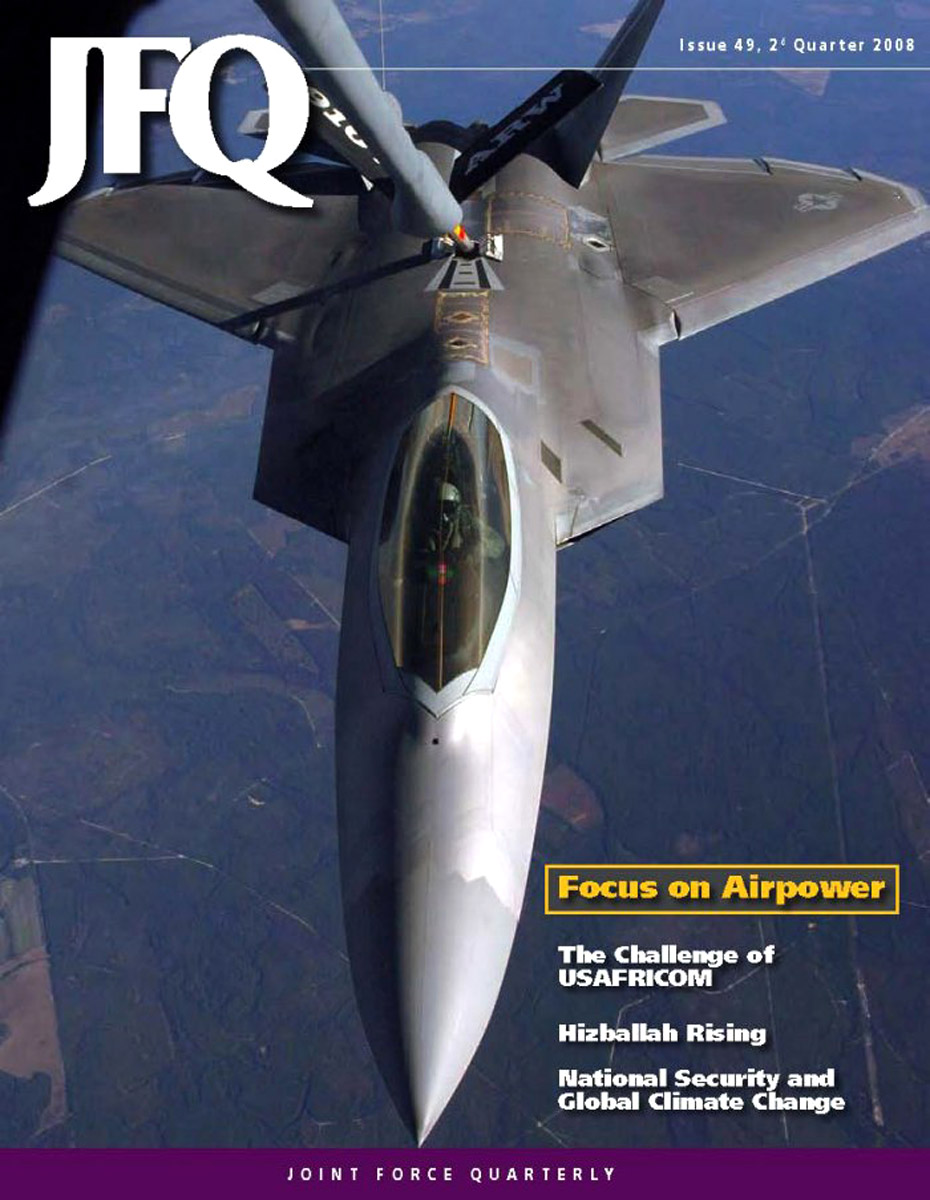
Joint Force Quarterly

The latest edition of the Joint Force Quarterly focuses on airpower. Included are articles by the Air Force chief of staff and several major command commanders offering views of leaders who command the most powerful air, space and cyberspace organization on Earth.